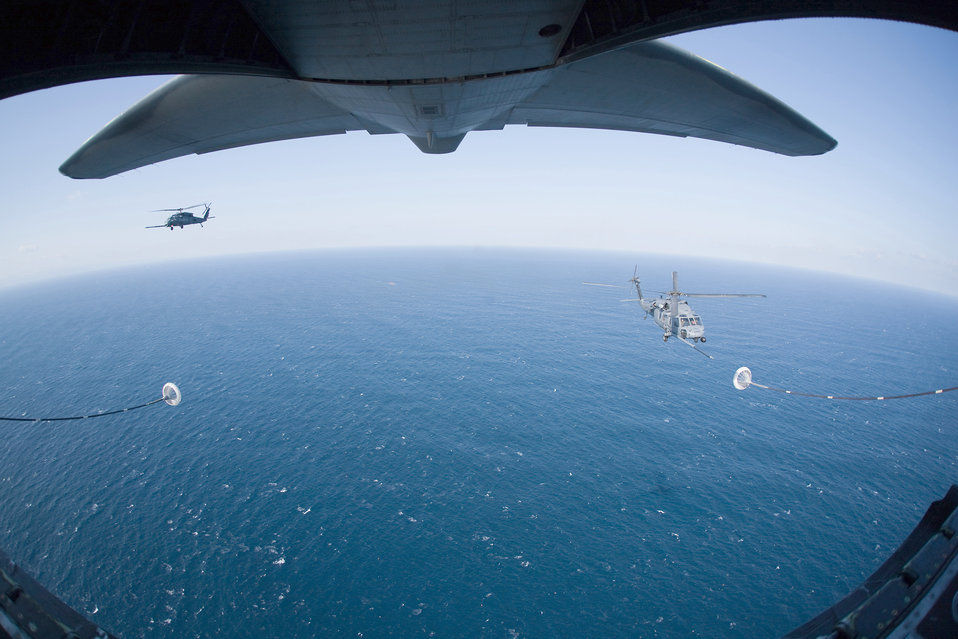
Crew conducts refueling

An MC-130P Combat Shadow prepares to refuel two HH-60 Pave Hawk helicopters March 18, 2011, above the Pacific Ocean. The refueling missions are in support of humanitarian relief operations after an earthquake and subsequent tsunami rocked Northeastern Japan.